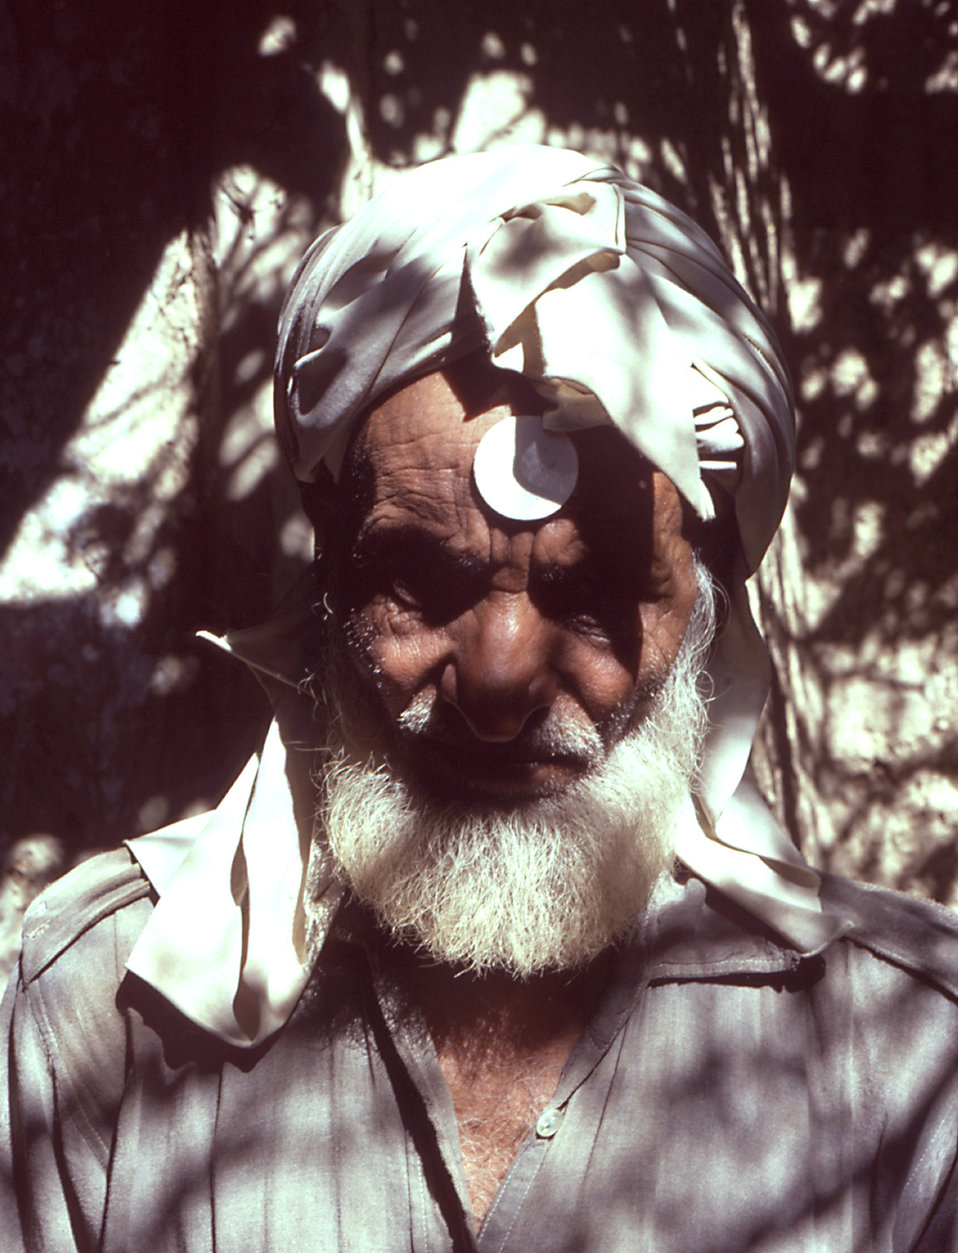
This photo depicts a Pakistani malaria control worker undergoing skin patch testing during a 1977 malathion poison study.